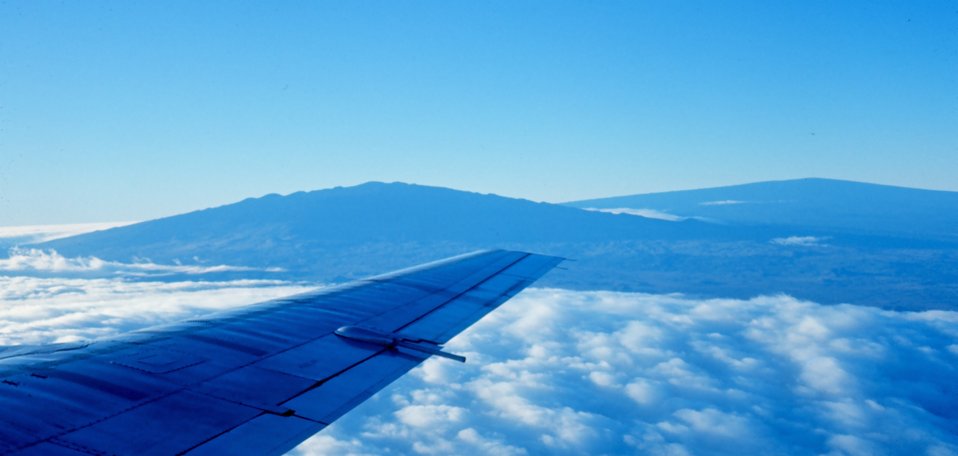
Aerial view of Mauna Loa and Mauna Kea on the island of Hawaii.